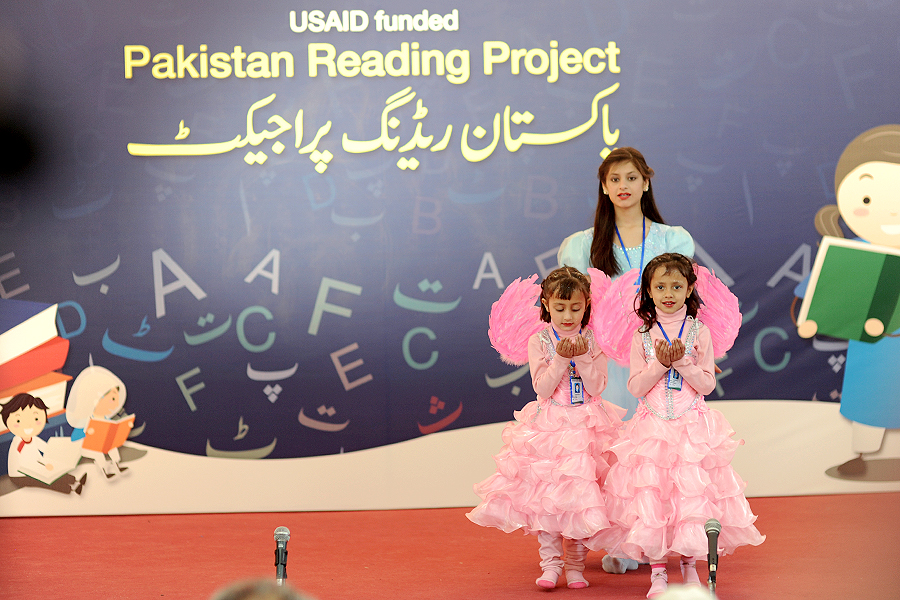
United States and Pakistan Launch the Pakistan Reading Project